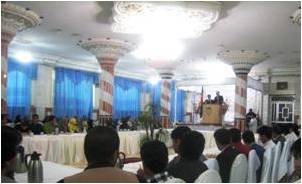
Students Graduate from ASMED Internship Program